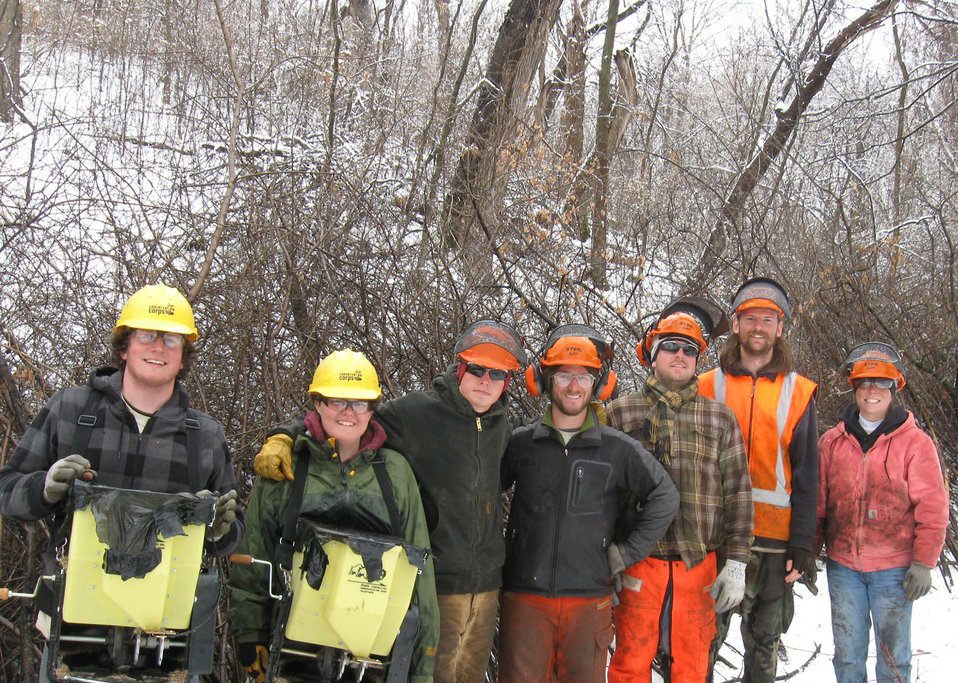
Seeding Crew

The final crew seeded the area with oats and savanna grass mix.